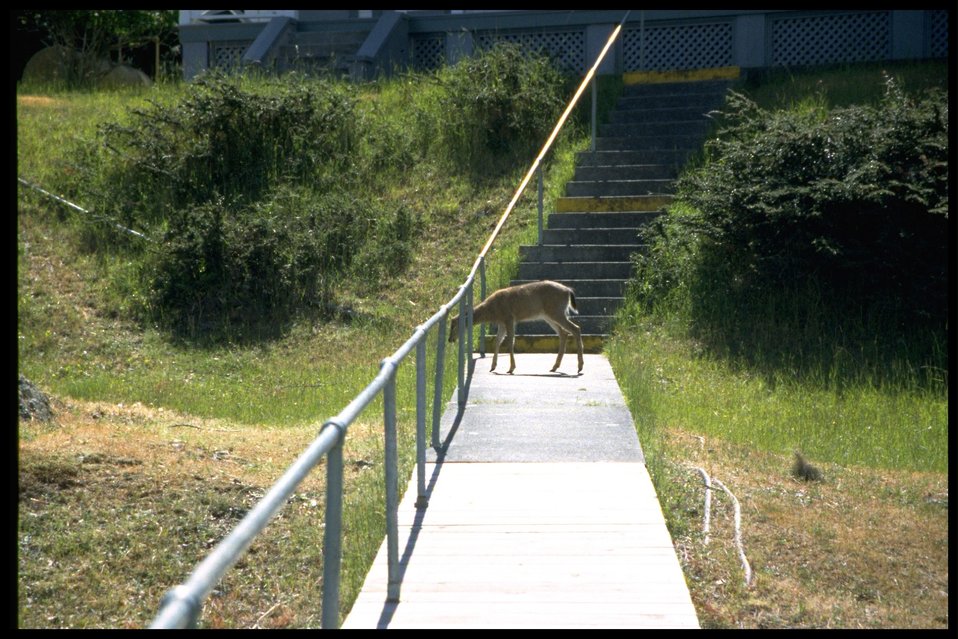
Deer walk between the Turn Point lighthouse and the living quarters.